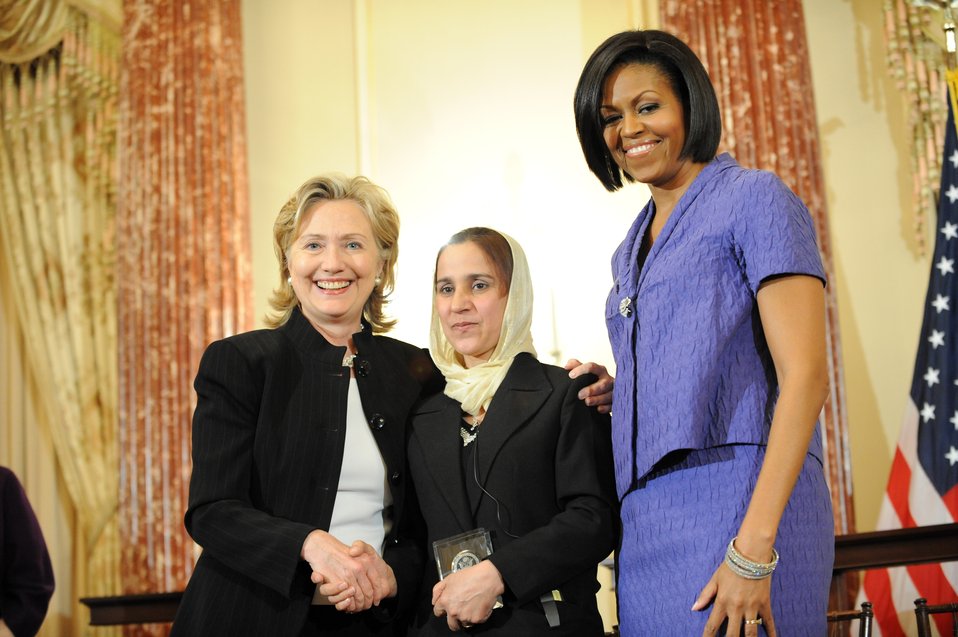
Secretary Clinton With First Lady Michelle Obama and Honoree Shukria Asil of Aghanistan

U.S. Secretary of State Hillary Clinton and First Lady Michelle Obama stand with Honoree Shukria Asil of Aghanistan at the 2010 International Women of Courage Awards at the U.S. Department of State, Washington, D.C. March 10, 2010.